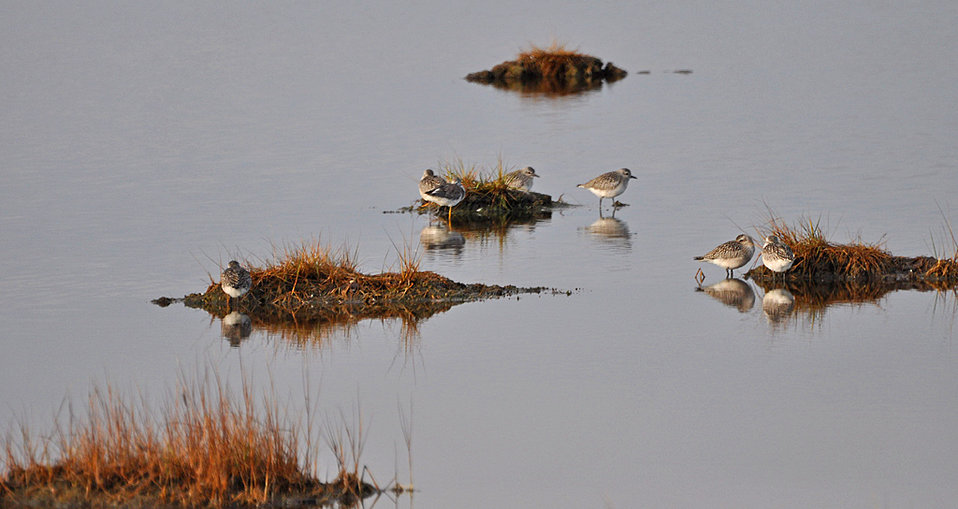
Photo of the Week - Sandpipers at Parker River National Wildlife Refuge

Photo of the Week - 12/3/10

Sandpipers at Parker River National Wildlife Refuge in Newburyport, Massachusetts.